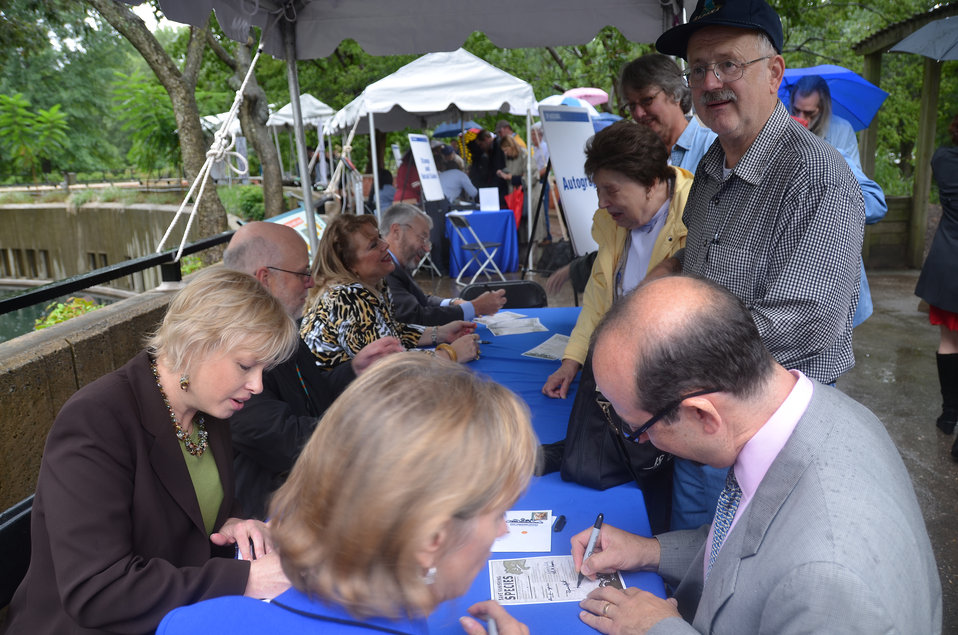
Save Vanishing Species Stamp First Day of Issue